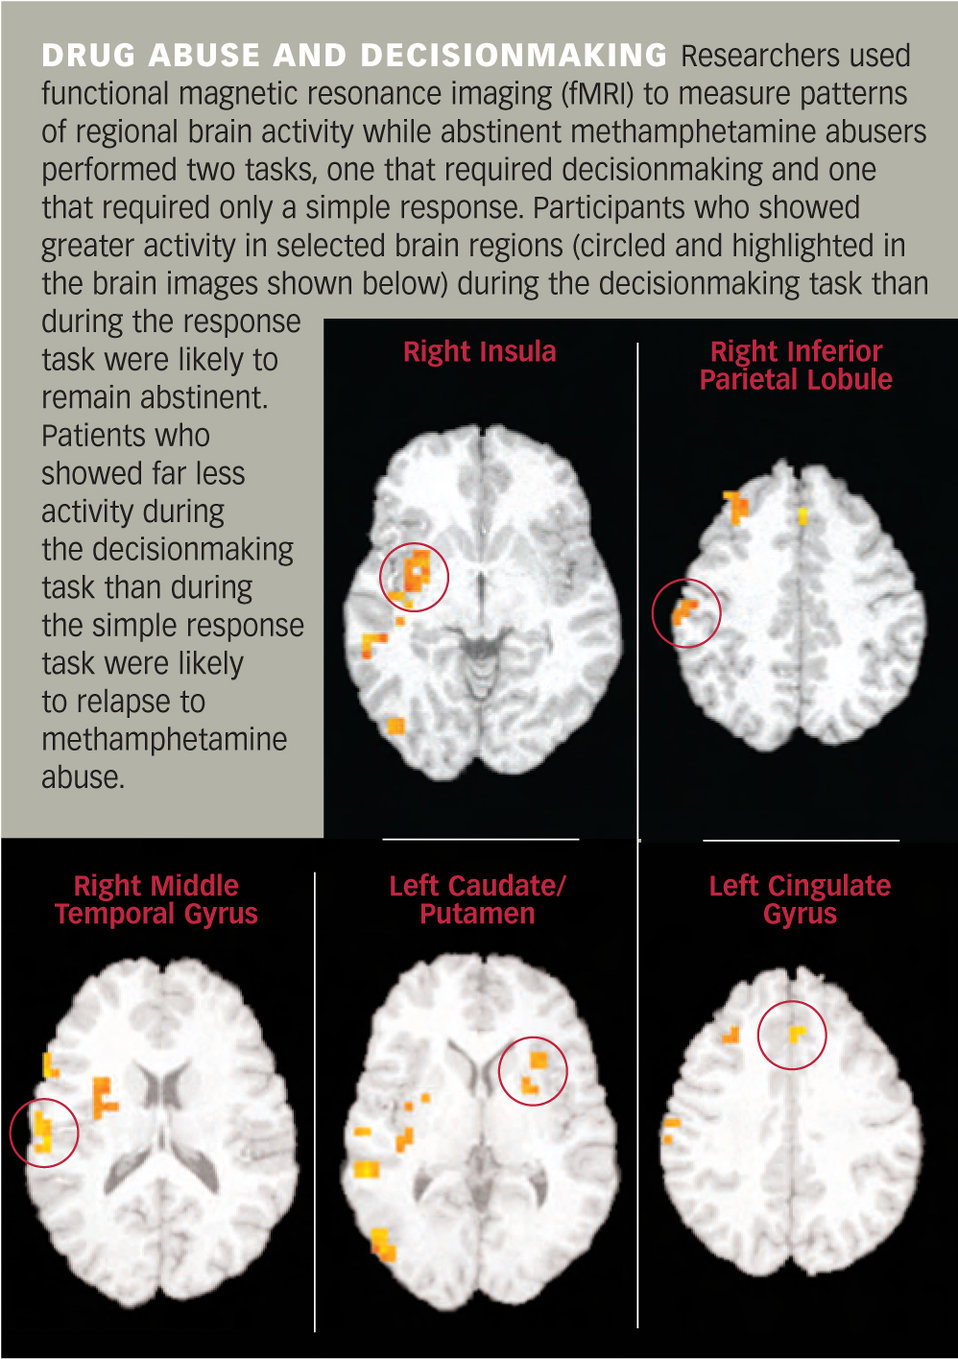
Drug Abuse and Decisionmaking